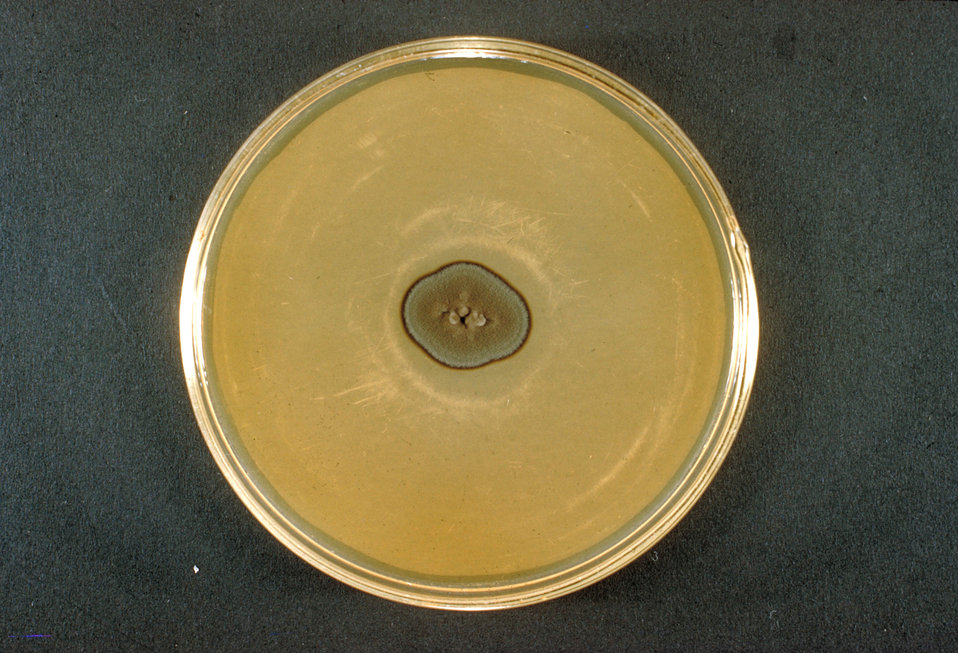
Shown here is a plate culture of Cladosporium carrionii, at four weeks growth.